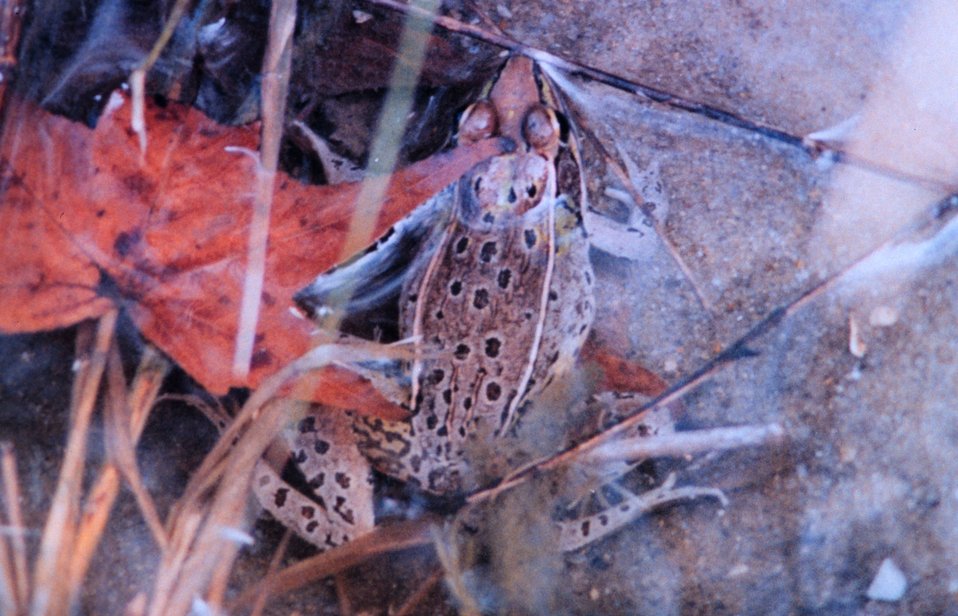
A well-camouflaged Leopard Frog sitting near the edge of a salt water creek.